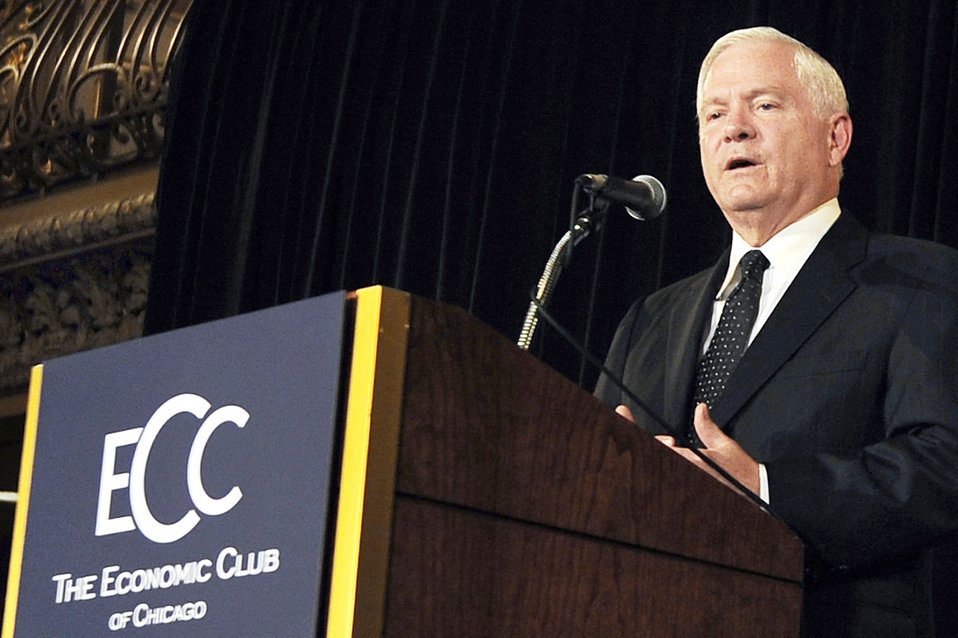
SECDEF in Chicago

Defense Secretary Robert M. Gates tells members of the Economic Club of Chicago July 16 that the Defense Department must end